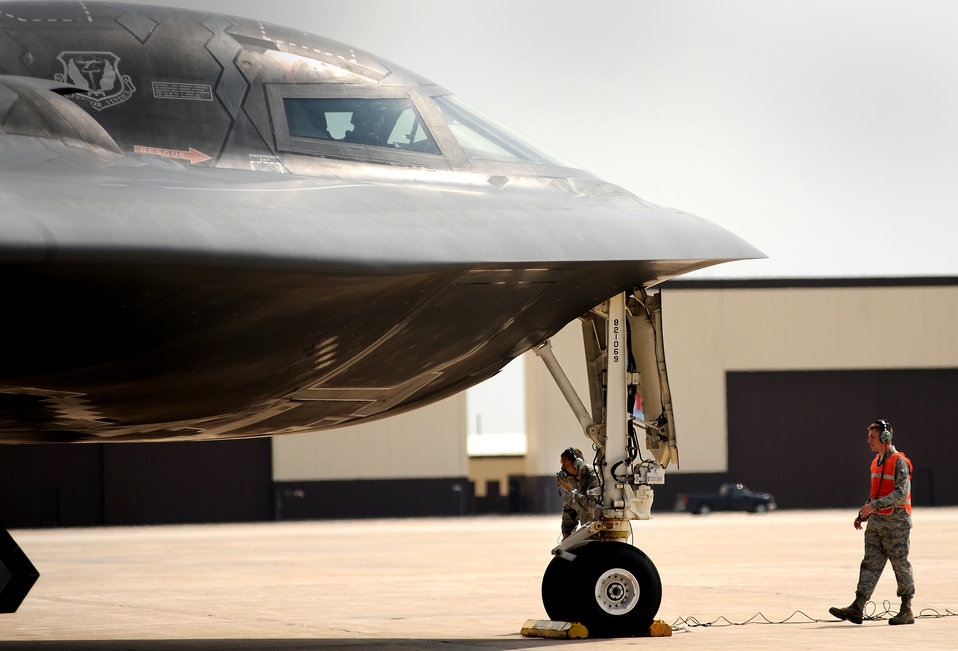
Wheels on the ground

Crew chiefs communicate with the pilot of a B-2 Spirit April 18, 2011, after the aircraft returned to Whiteman Air Force Base, Mo., following a sortie.